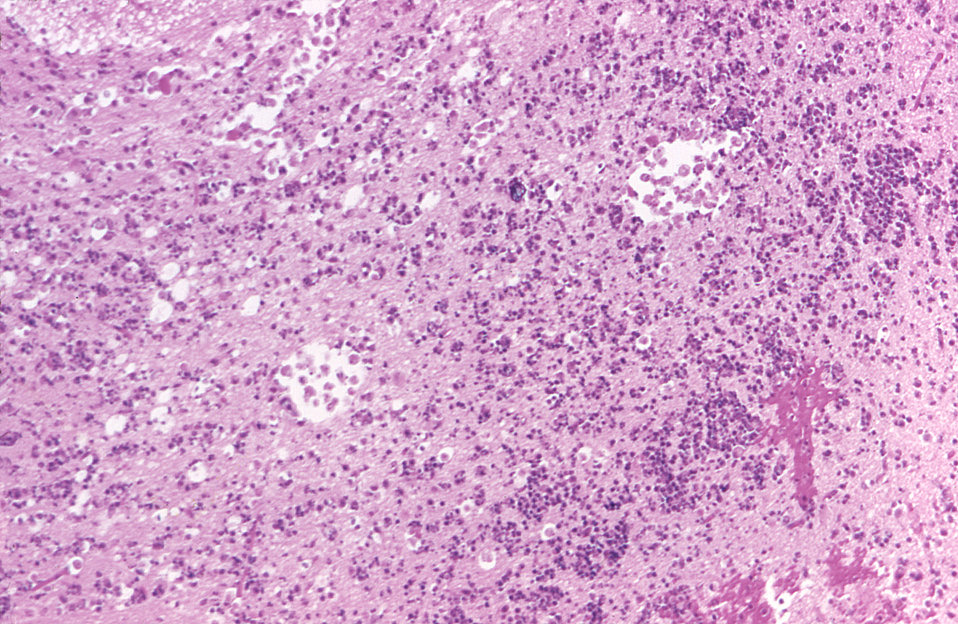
Magnified 125X, this 1973 H&E-stained photomicrograph revealed the cytoarchitectural histpathology found in a case of primary amoebic meningoencephalitis (PAM), due to the presence of free-living, Naegleria gruberi, amoebae. Free-living amoebae belonging to the genera Acanthamoeba, Balamuthia, and Naegleria, are important causes of disease in humans and animals.What is Naegleria?